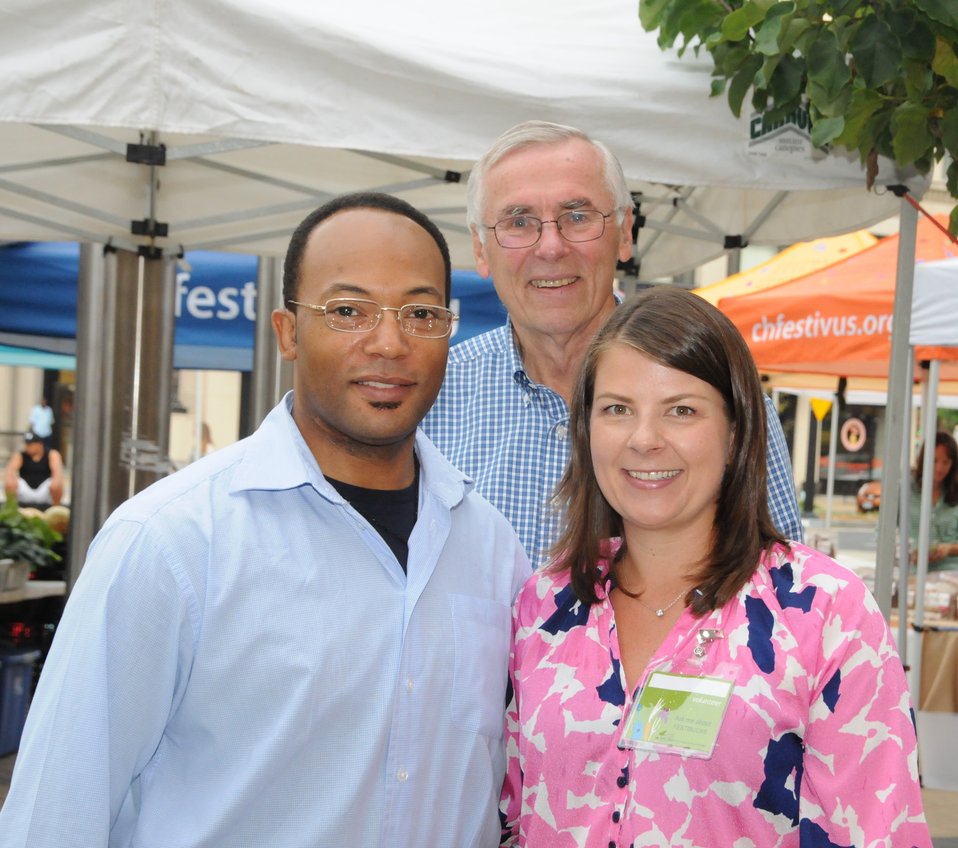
Arthur, Wholesome Wave Co-Founder Gus Schumaker, C

Arthur Neal, AMS Deputy Administrator, Transportation and Marketing Program (left), at the National Farmers Market Week kick-off event. The event was held at the Columbia Heights Community Marketplace in Washington, D.C.